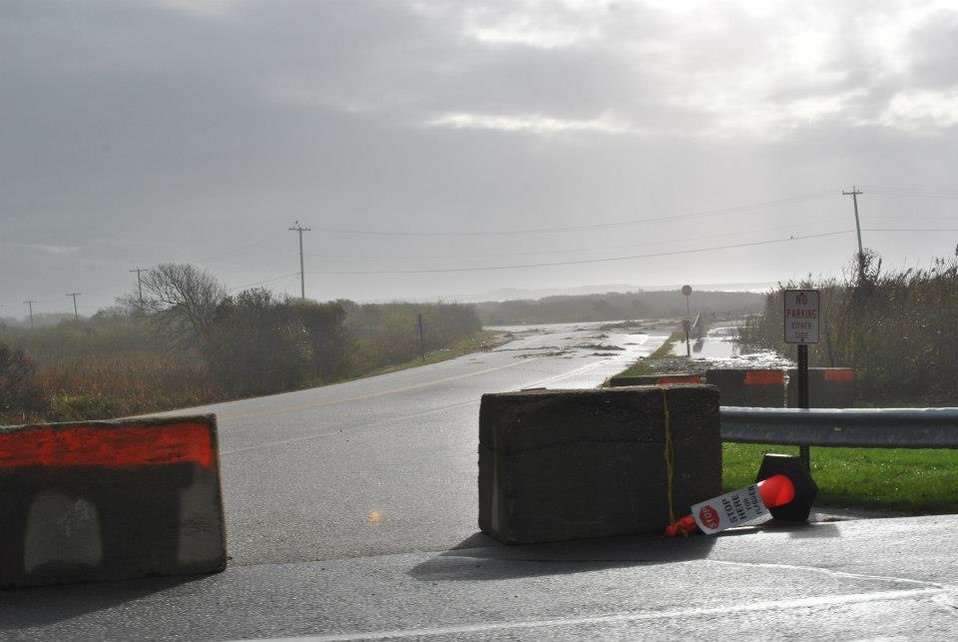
Wash over on Sachuest Point Rd - Oct. 30 (RI)

From Paradise Ave, you can see how washed over Sachuets Point Road is - Tuesday, 10/30